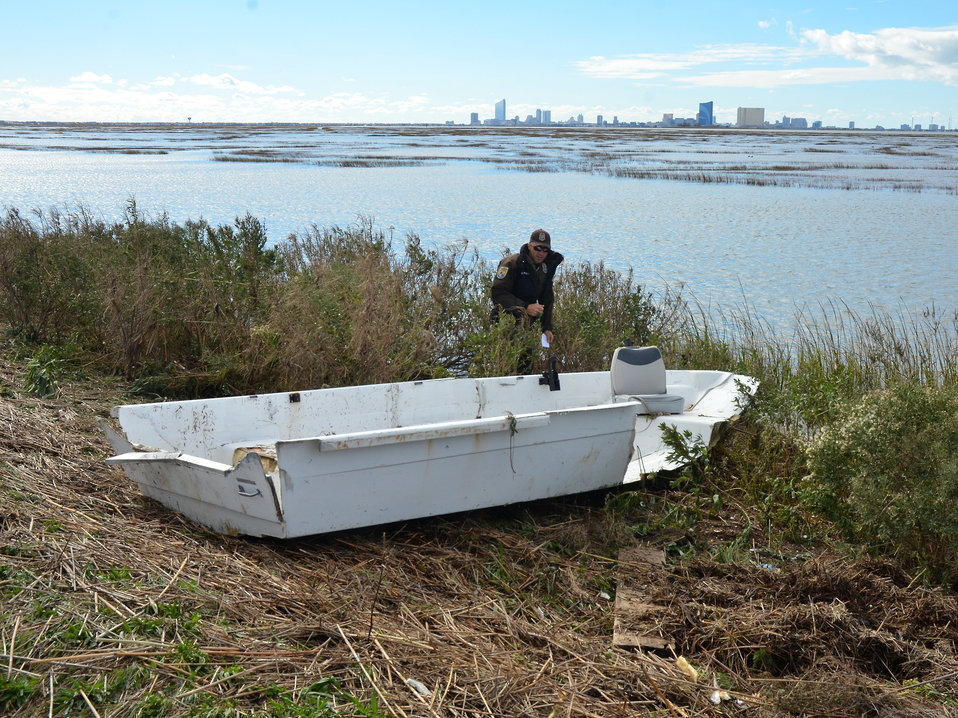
Assessing the damage (NJ)

A stranded boat, as an employee evaluates damage and erosion to the south dike at Edwin B. Forsythe National Wildlife Refuge after Hurricane Sandy.